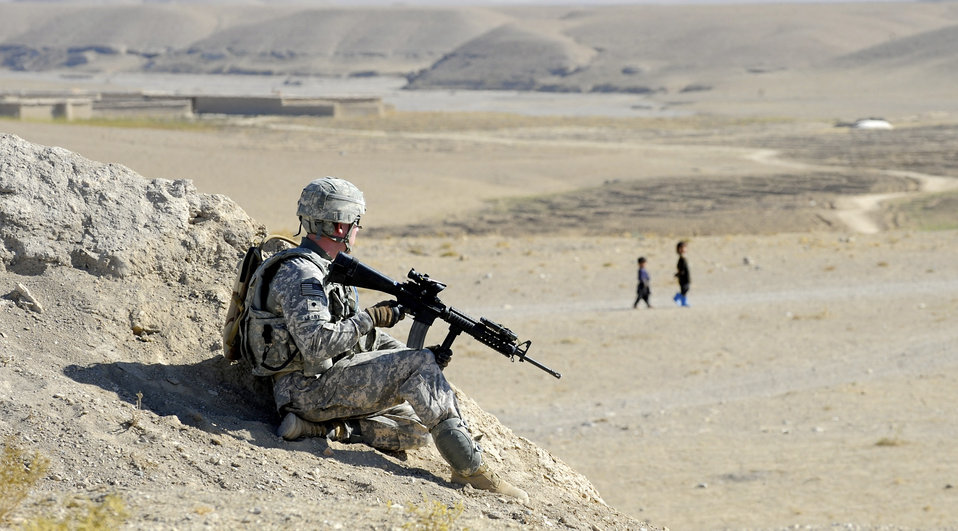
Provincial Reconstruction Team Zabul

U.S. Army Specialist Timothy Leary pulls security during a patrol from a hill Nov. 1, 2010, near the city of Qalat, Afghanistan, in the Zabul Province. The Provincial Reconstruction Team Zabul is composed of Air Force, Army, Department of State, U.S. Agency for International Development and Department of Agriculture personnel who work with the government of Afghanistan to improve governance, stability and development throughout the province.